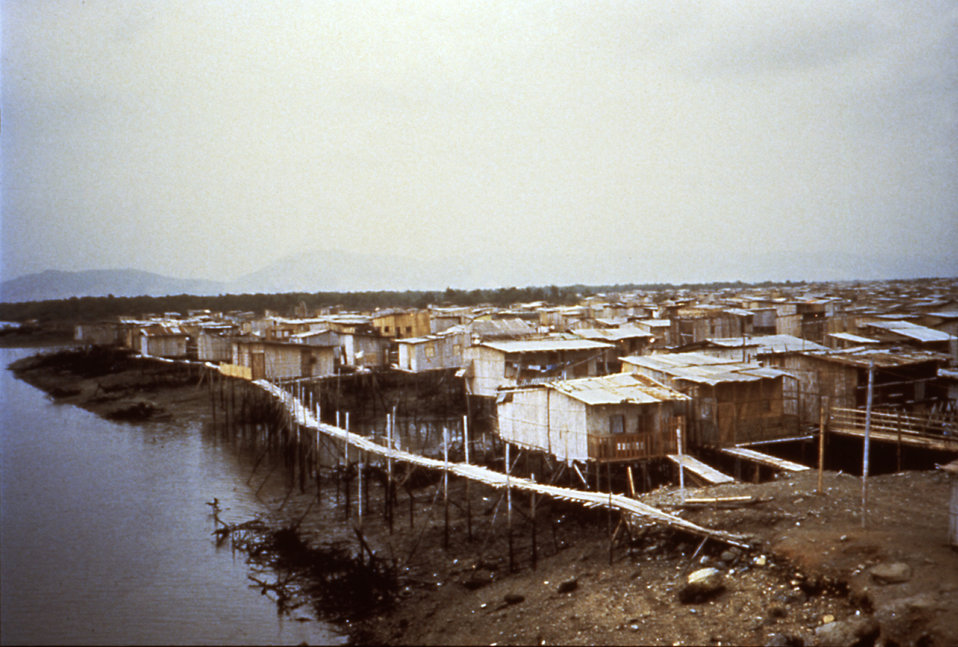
This slide shows a slum in Ecuador that was heavily affected by cholera due to its proximity to unsafe water sources.